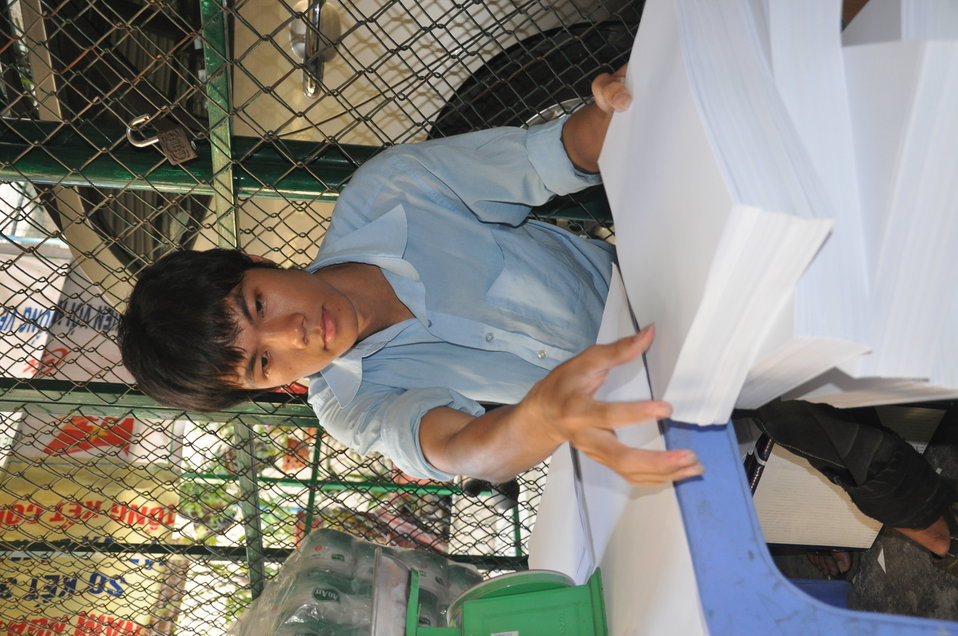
USAID supports training on livelihood skills for persons with disabilities in Danang.

Danang, June 10, 2013.